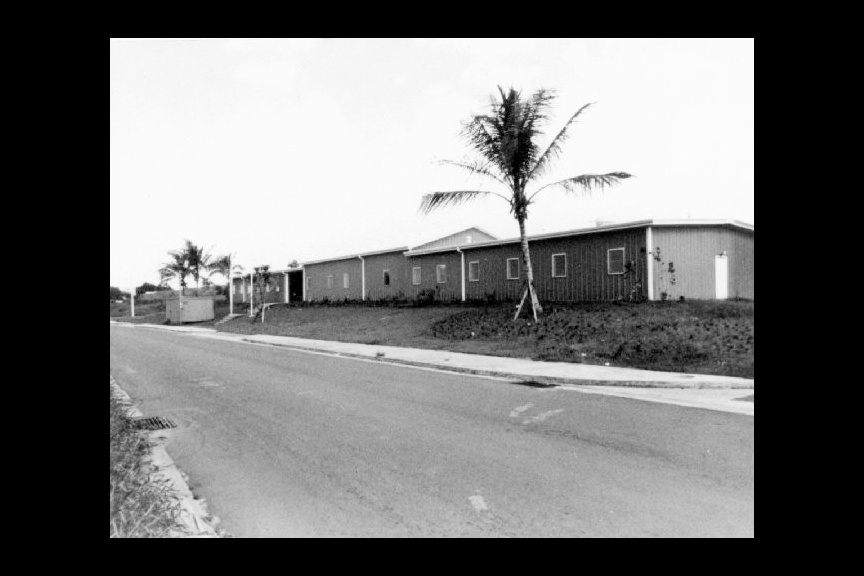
CDC Field Station in San Juan, Puerto Rico, 1977.